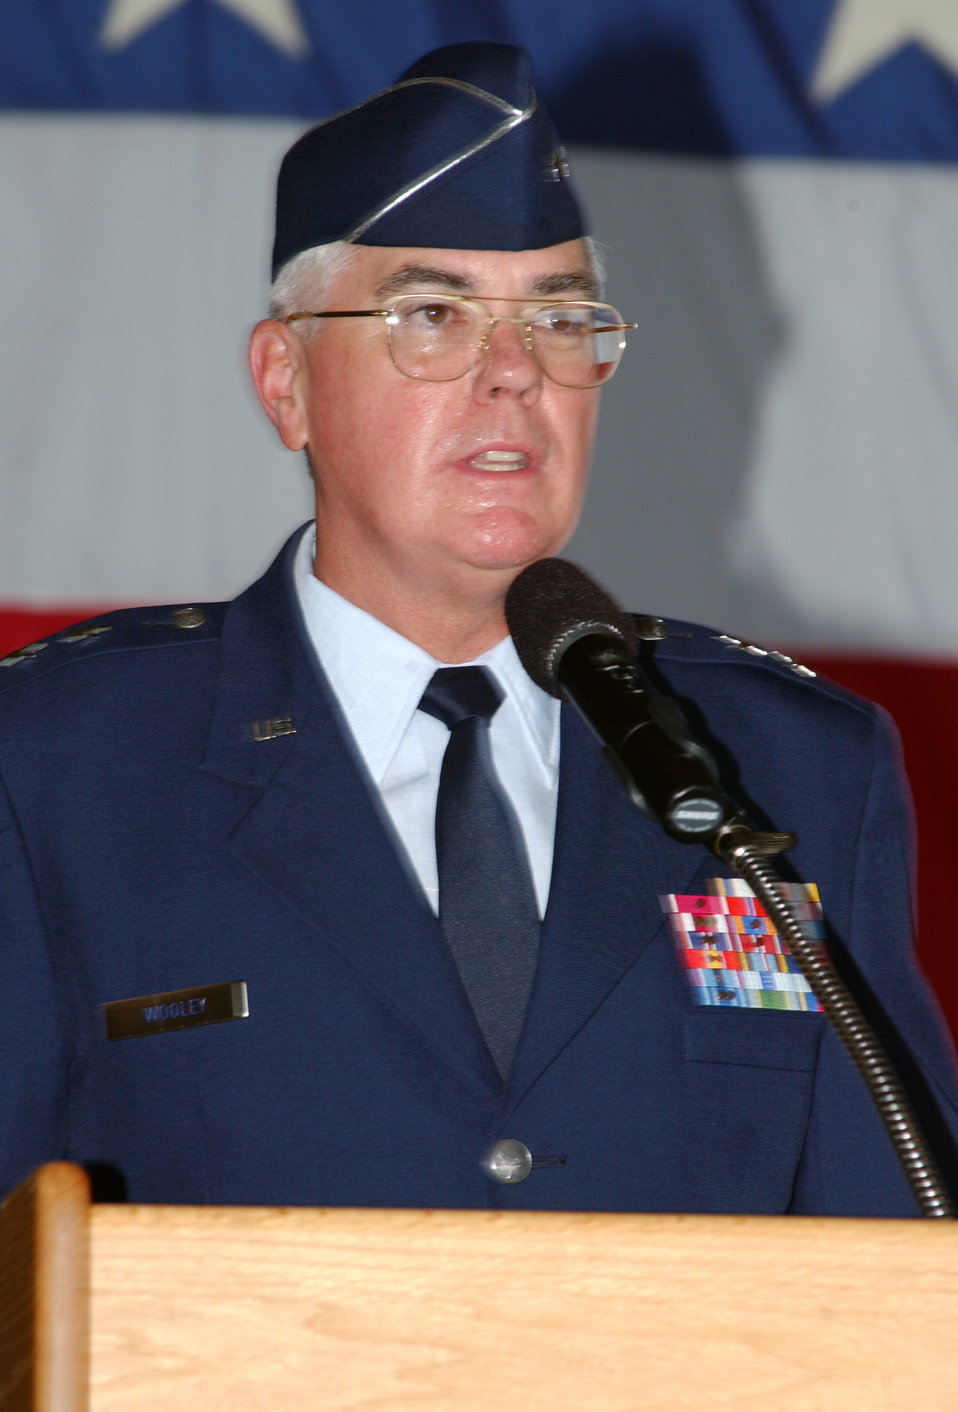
Change of Command

HURLBURT FIELD, Fla. -- Maj. Gen. Michael W. Wooley assumed command of Air Force Special Operations Command during a ceremony here July 1.